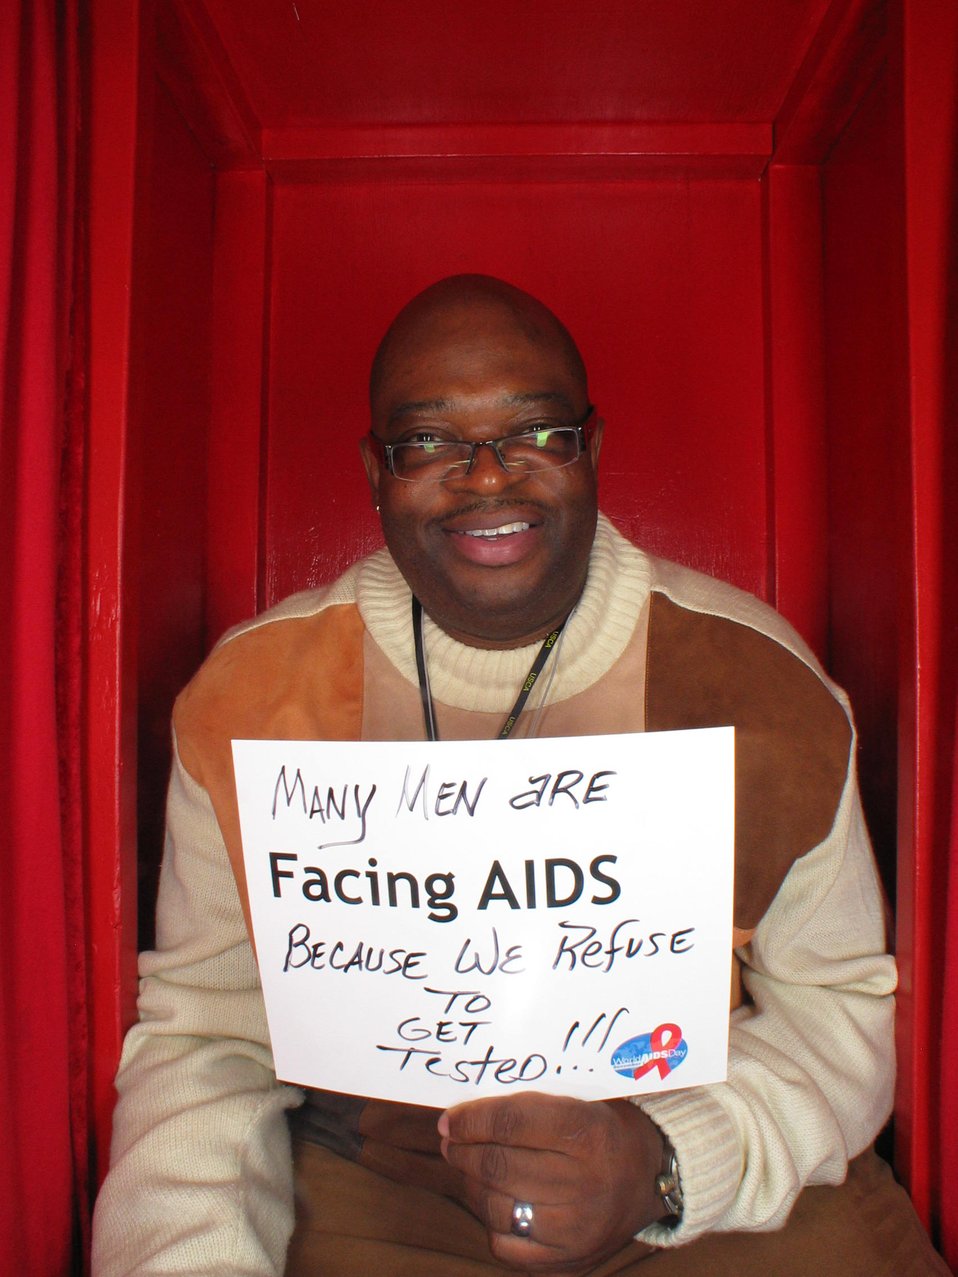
Many men are Facing AIDS because we refuse to get tested!!!